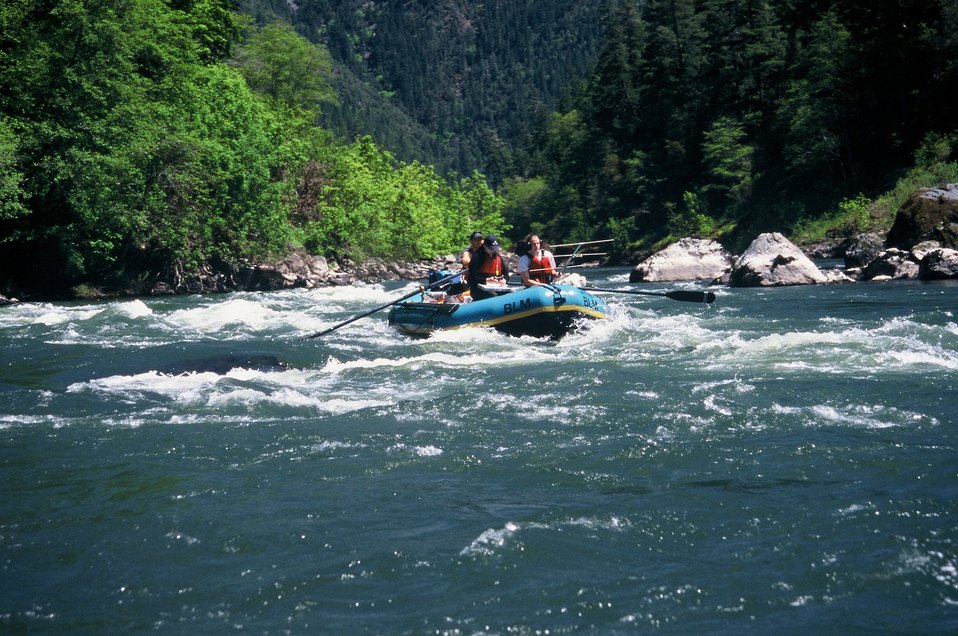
Wild section of the Rogue River from Grave Creek to Foster Bar May 19 to May 22.